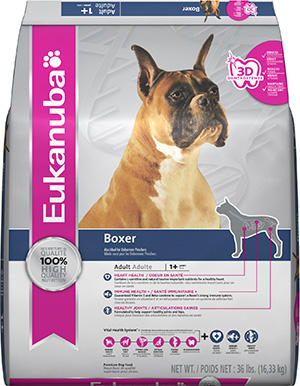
RECALLED – Dog and Cat foods - Dry

August 14, 2013 – Product Recall – P&G Voluntarily Recalls Limited Quantity of Dry Pet Food Due to Possible Health Risk.